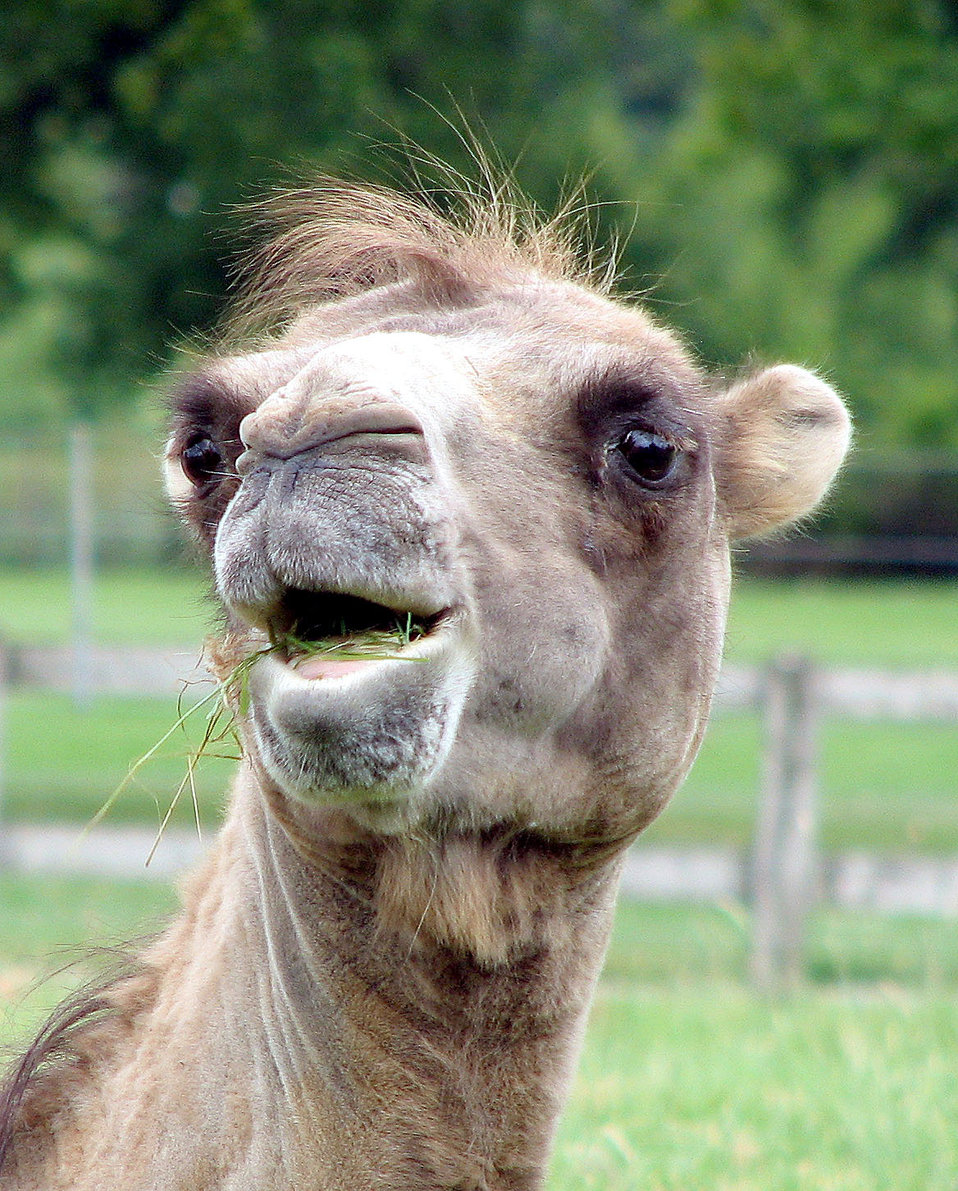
Bactrian.camel.smiles.arp